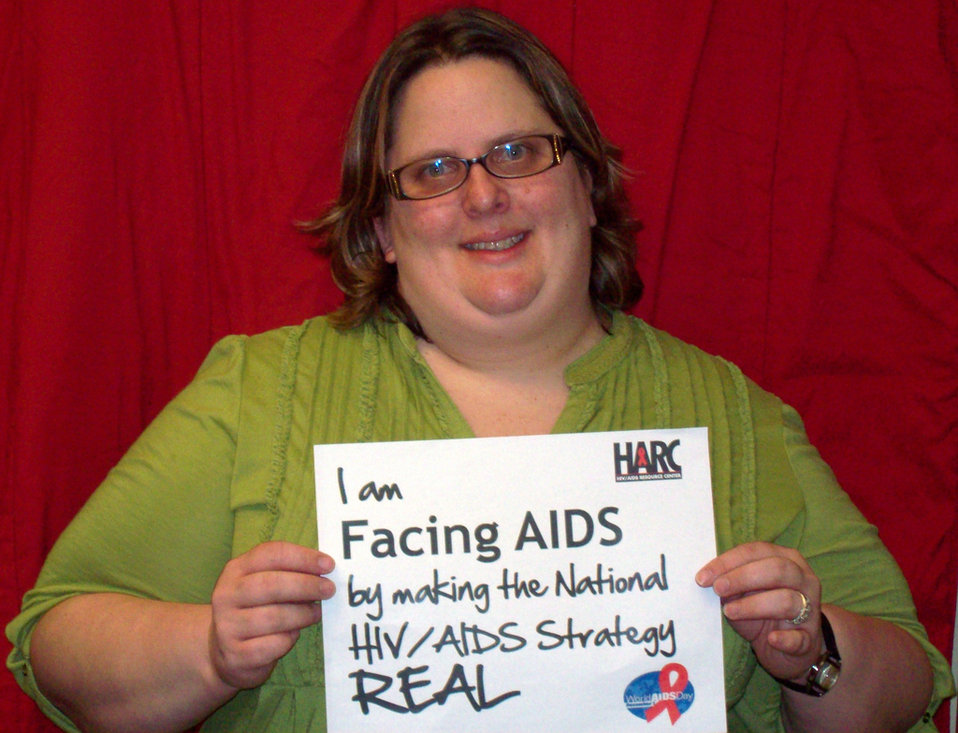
I am Facing AIDS through NHAS-40